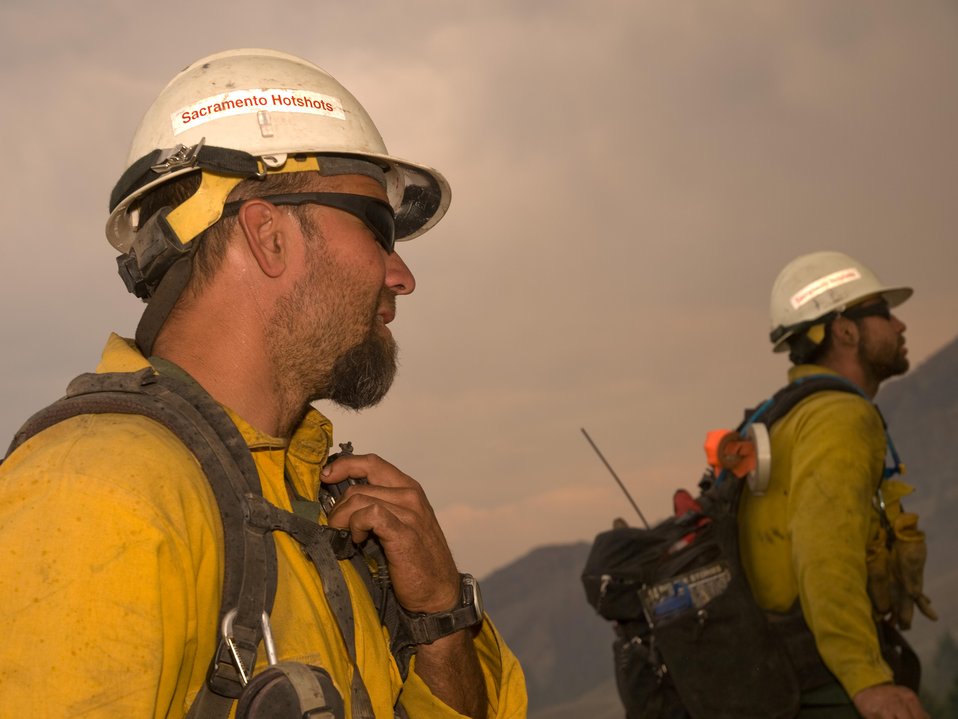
Firefighters work on the Lodgepole Fire. The Lodgepole Fire in the Salmon-Challis National Forest near Challis, ID began on Jul. 20, 2013 by lightning has consumed approximately 13,700 acres and is approximately 15% contained.